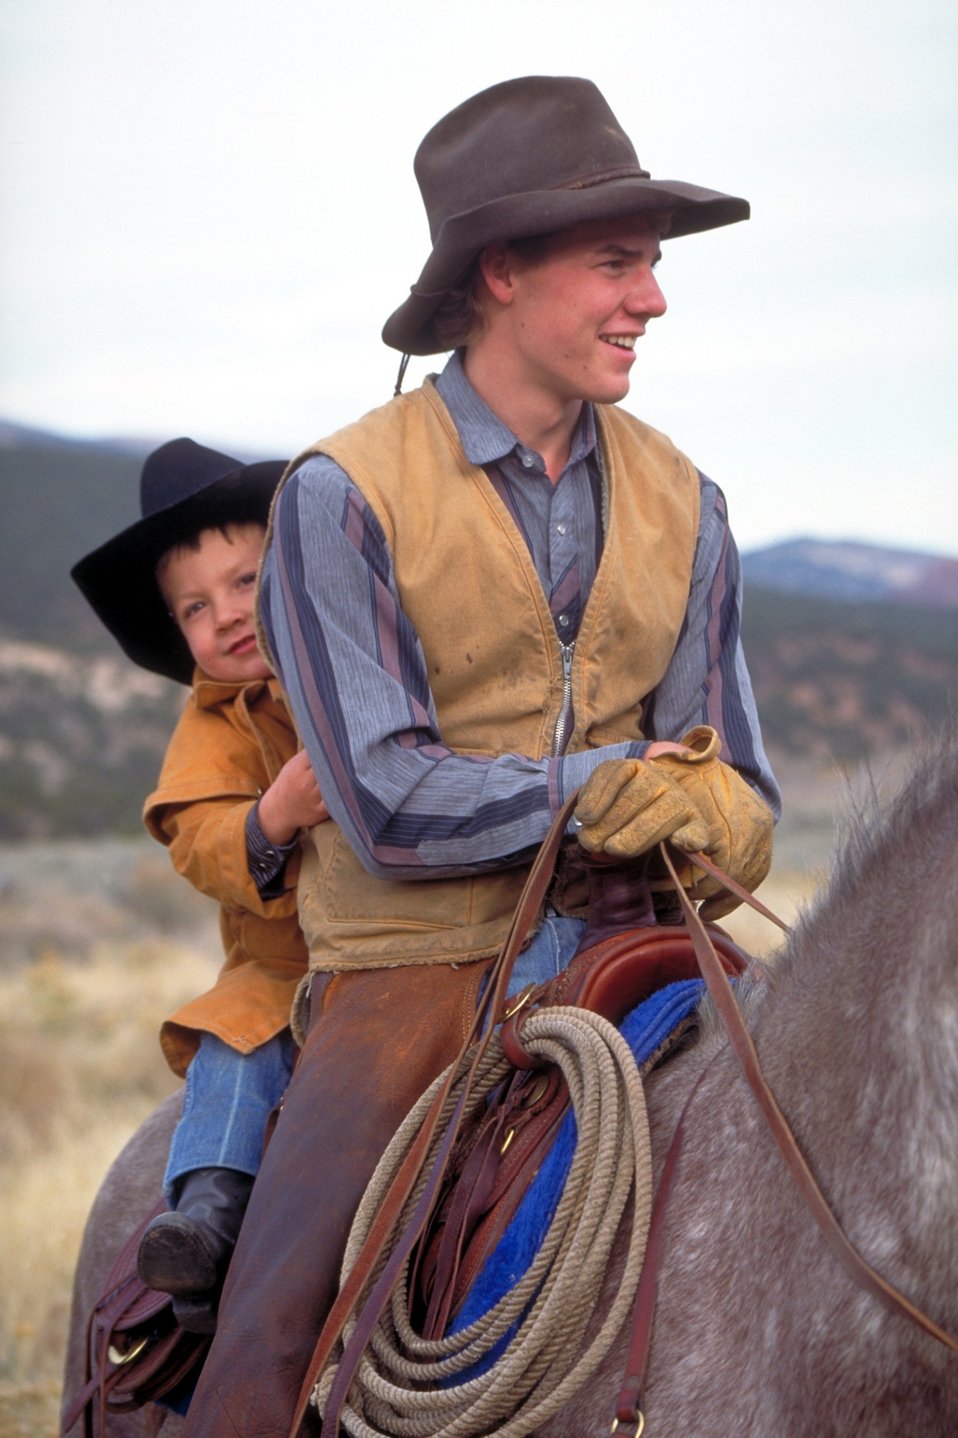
Working cowboys living near Vernal, Utah.